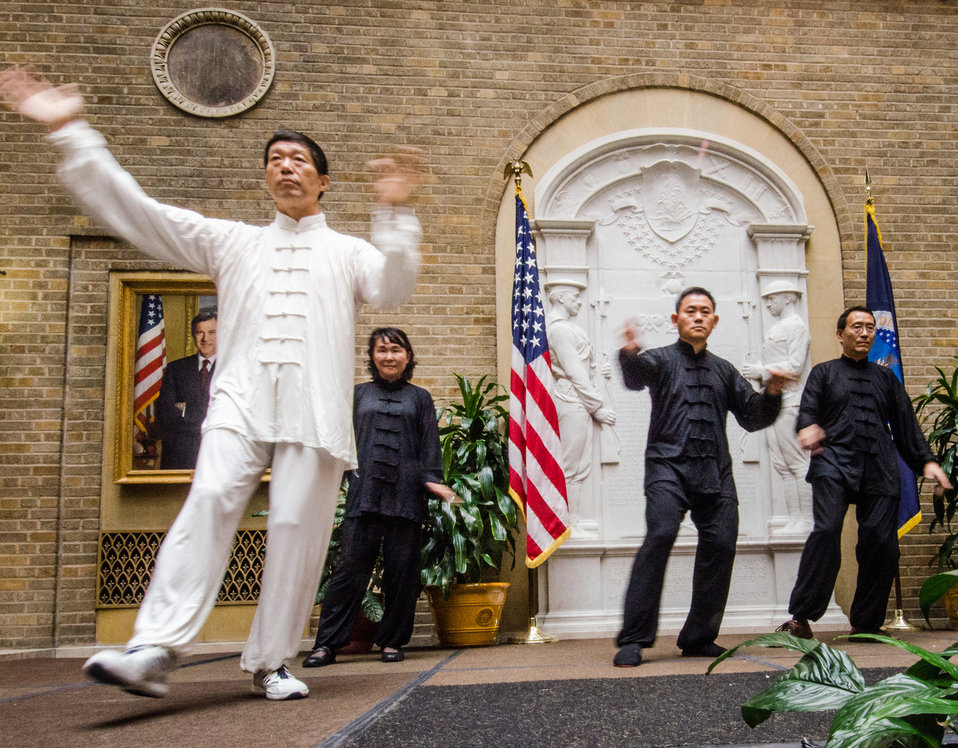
U.S. Department of Agriculture (USDA) employees Albert Chang, Mark Xu, Haijiang Wang MeiXu and Uni Li, from (respectively) Rural Development (RD), Foreign Agricultural Service (FAS), Grain Inspection, Packers & Stockyards Administration (GIPSA), Agricultural Marketing Service (AMS) and Departmental Management (DM); demonstrate the Chinese martial art of tai chi, during the USDA Asian Pacific American Heritage Month Observance, at the USDA headquarters, Whitten Building patio, in Washington, D.C., on Thursday, May 23, 2013. This year’s theme is “Building leadership; Embracing the Cultural Values and Inclusions.”